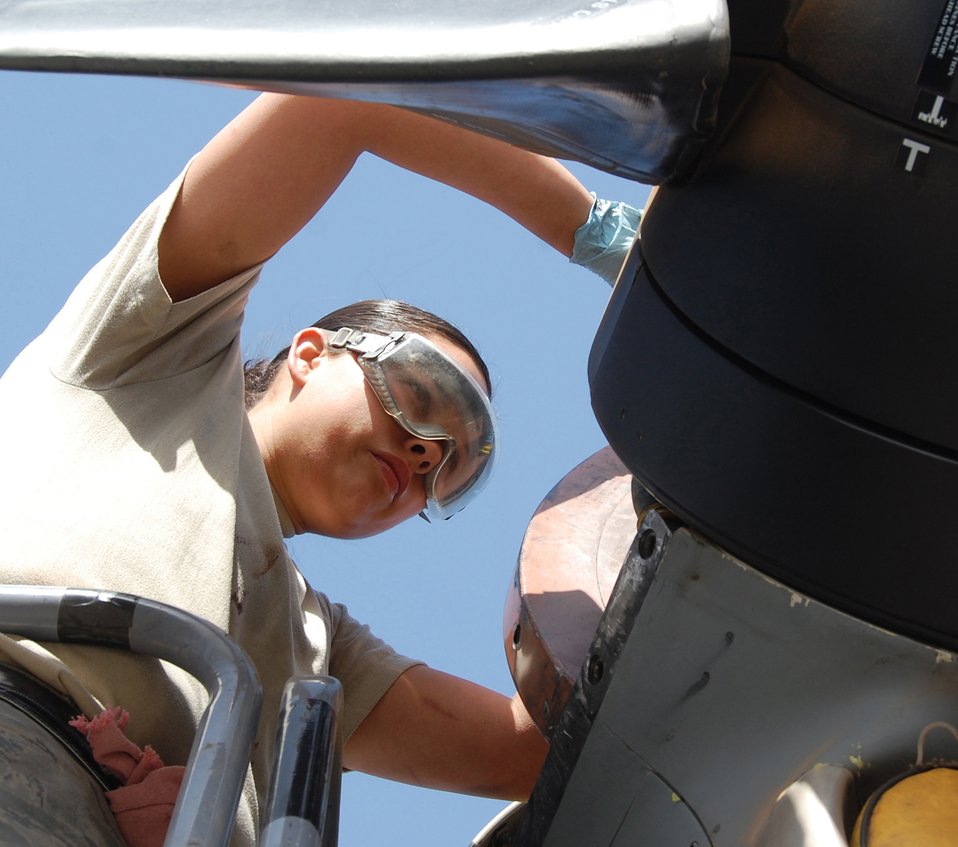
Senior Airman Rebecca Roa checks the propeller servicing on a C-130 Hercules Feb. 5, 2010, at an air base in Southwest Asia. Airman Roa is a crew chief assigned to the 386th Expeditionary Aircraft Maintenance Squadron.